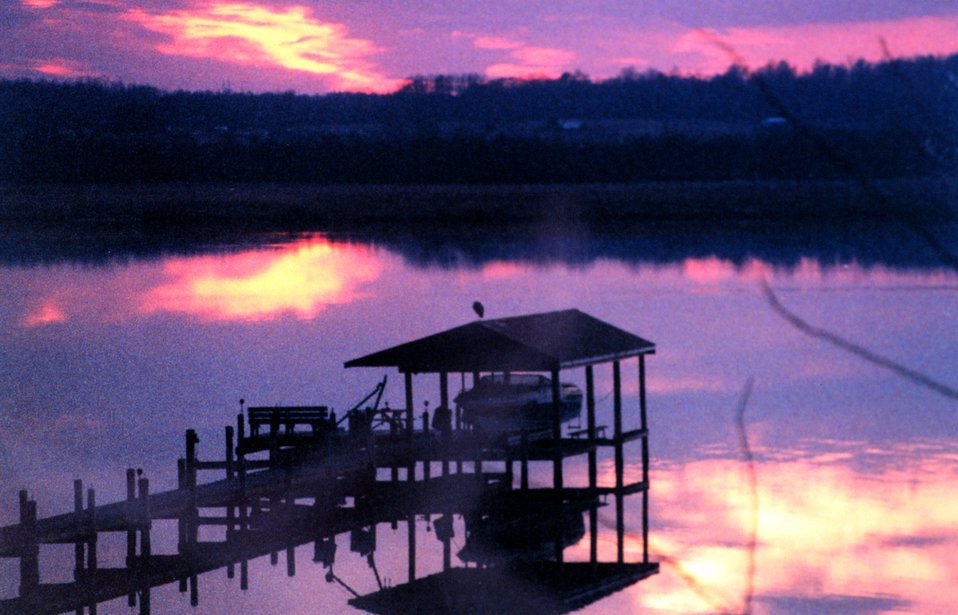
A winter Patuxent River sunset.